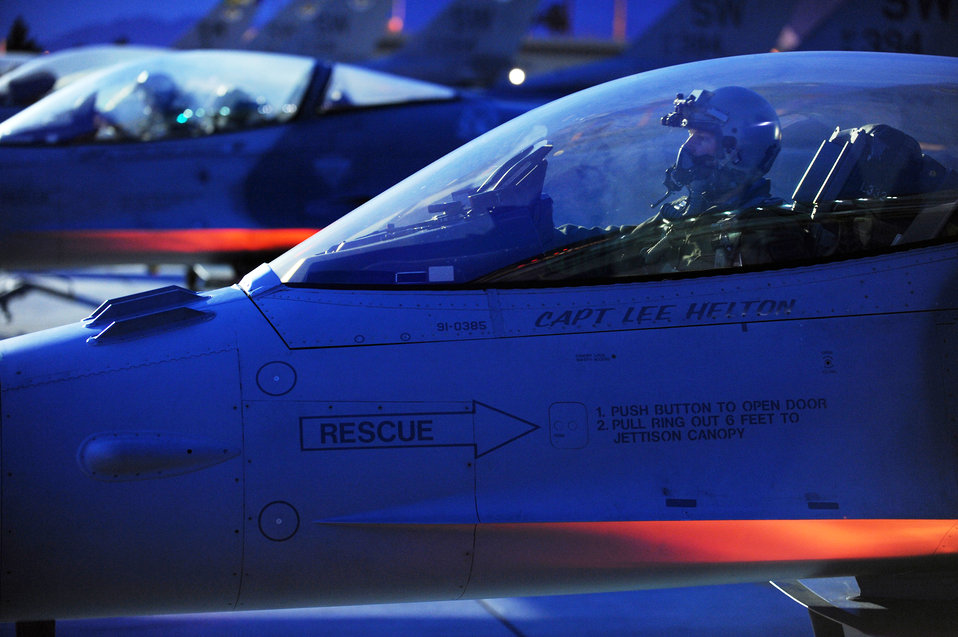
Shaw aircrews train at Red Flag

A pilot from the 55th Fighter Squadron at Shaw AFB, S.C., completes pre-flight checks in an F-16 Fighting Falcon before a night training mission at Red Flag Feb. 23, 2010, at Nellis Air Force Base, Nev. Red Flag is a realistic combat training exercise involving the air forces of the United States and its allies.